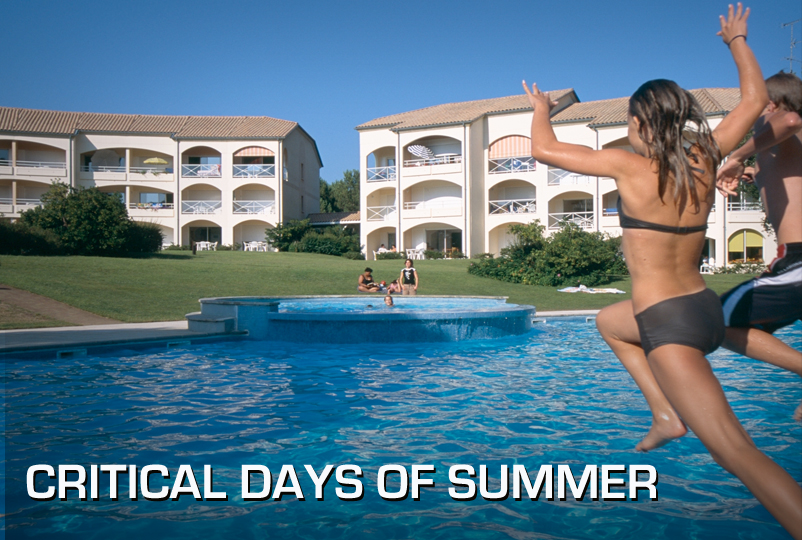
Critical Days of Summer